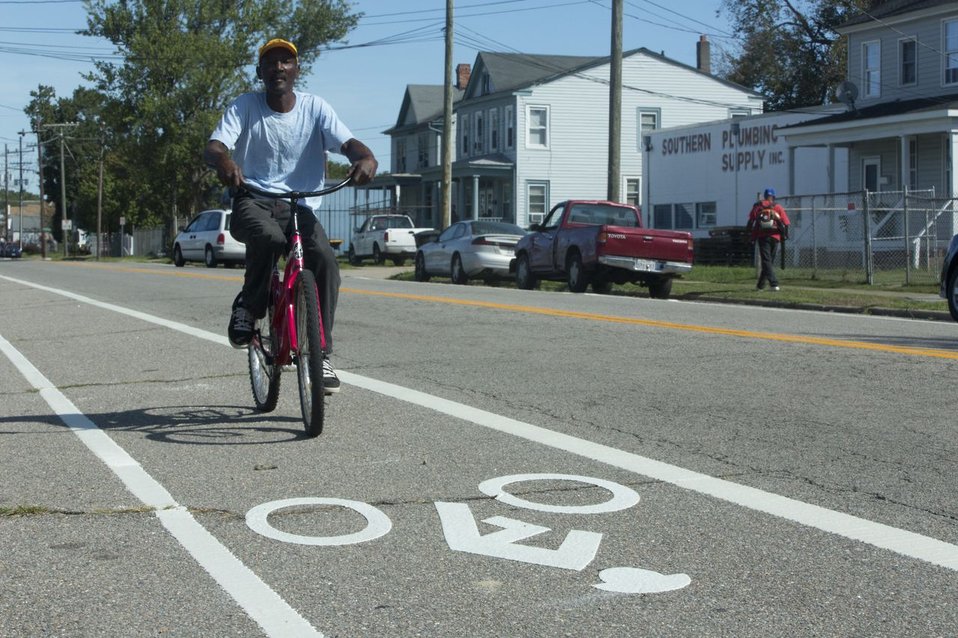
Bike Rider in Portsmouth Virginia

“Destination Portsmouth,” a plan to revitalize Portsmouth, Virginia, won EPA’s 2012 Programs and Policies Smart Growth Achievement Award. The city replaced outdated regulations to get the type of development residents wanted, making streets throughout the city more pedestrian and bicycle friendly.